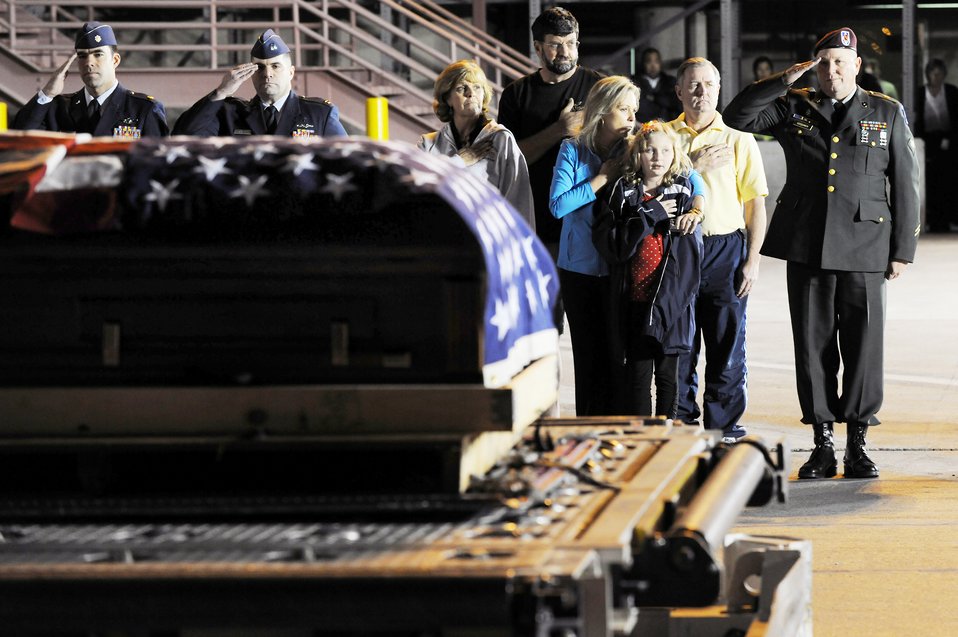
Air Force pilot missing in action from Vietnam War is identified

Maj. Richard Goodman (from left), U.S. Air Force Air Demonstration Squadron; Chaplain (Capt.) David Horton, 99th Air Base Wing; and members of the Goodman family salute as the remains of Maj. Russell C. Goodman are transferred Jan. 12, 2010, from an aircraft to a hearse at McCarran International Airport in Las Vegas. Major Goodman was killed in action in Vietnam on Feb. 20, 1967, when his F-4 Phantom was shot down.